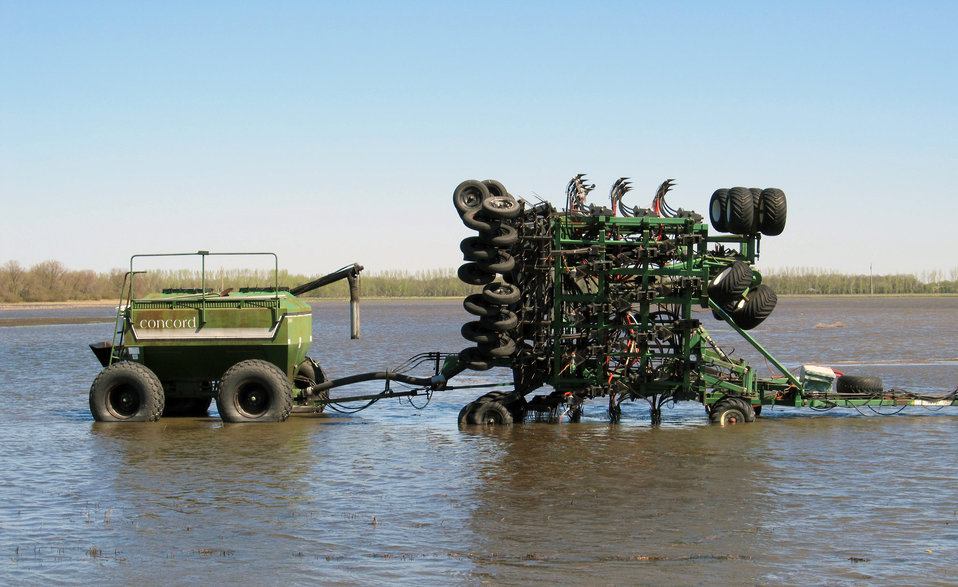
Flooding and water damage in the Park and Tongue River Watersheds located in Cavalier, Pembina and Cavalaier Counties in ND on Thursday, May 23, 2013.